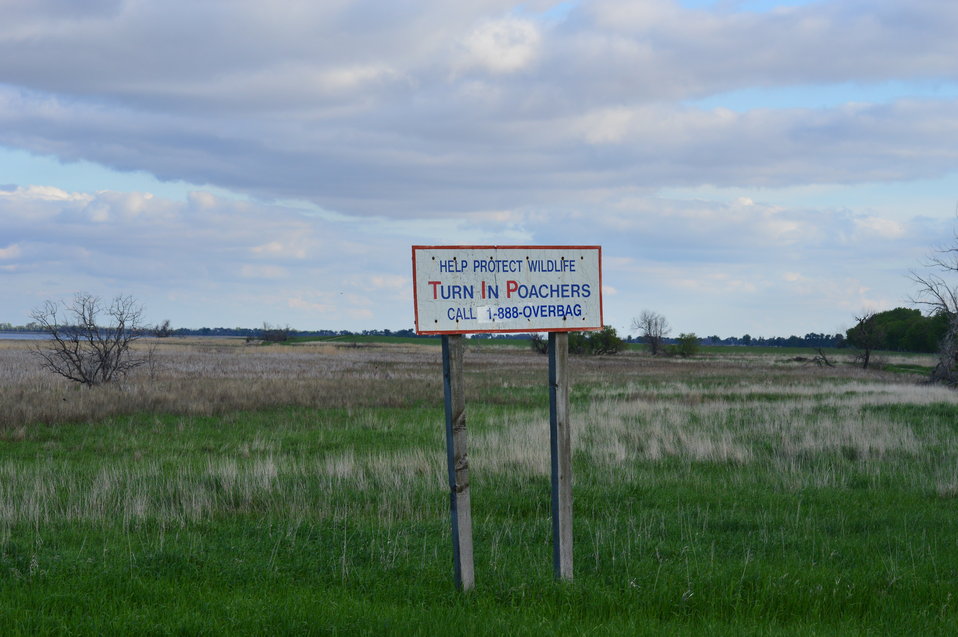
'Help Protect Wildlife' sign

Scenery and wildlife at Sand Lake National Wildlife Refuge in South Dakota